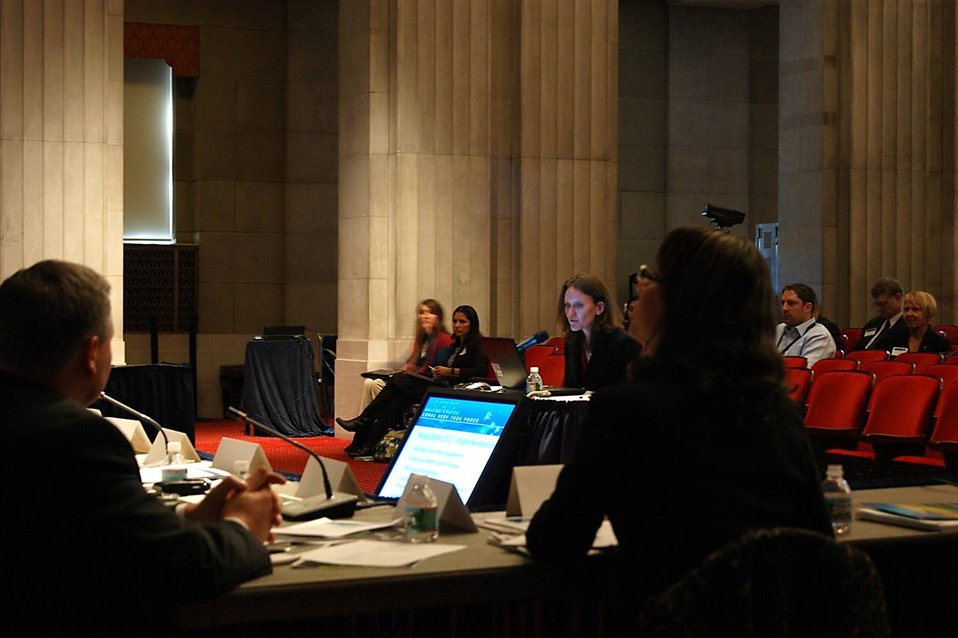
Coral Reef Task Force - Winter Meeting 2012